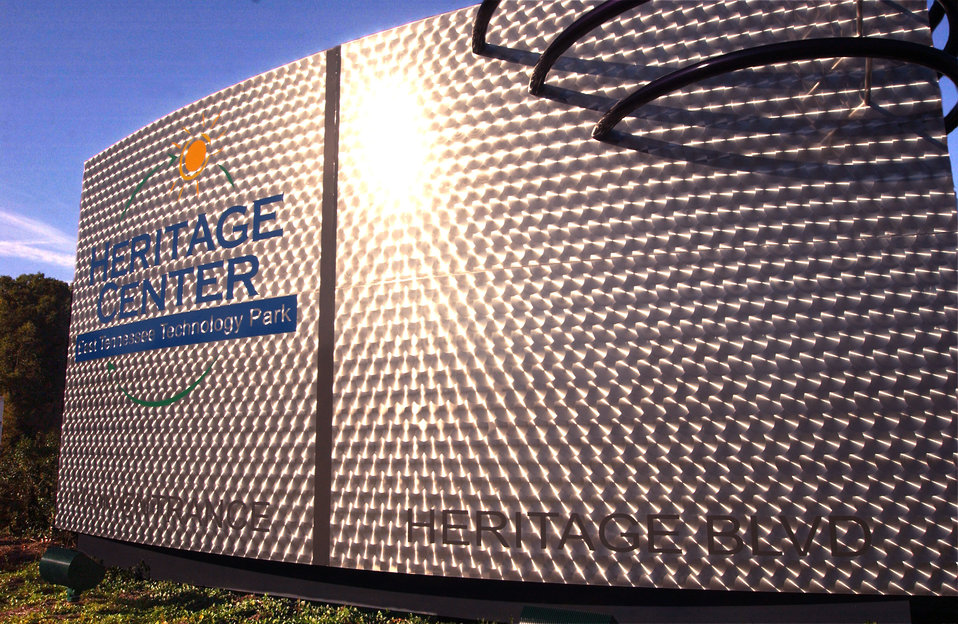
Heritage Center Welcome Signs

04-259-5 DOE photo by Lynn Freeny

Heritage Center Welcome Signs East Tennessee Technolgy Park Oak Ridge Tennessee 10-5-2004